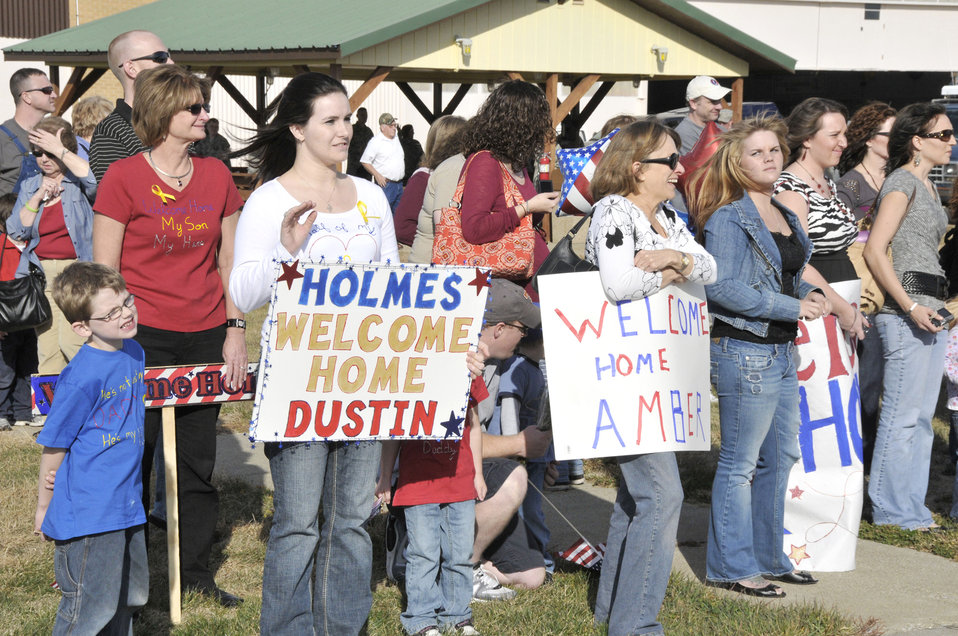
Guardsmen come home

Family members welcome home their heroes from the Indiana Air National Guard's 181st Security Forces Squadron Nov 10, 2010, at Hulman Field Air National Guard Base, Ind.